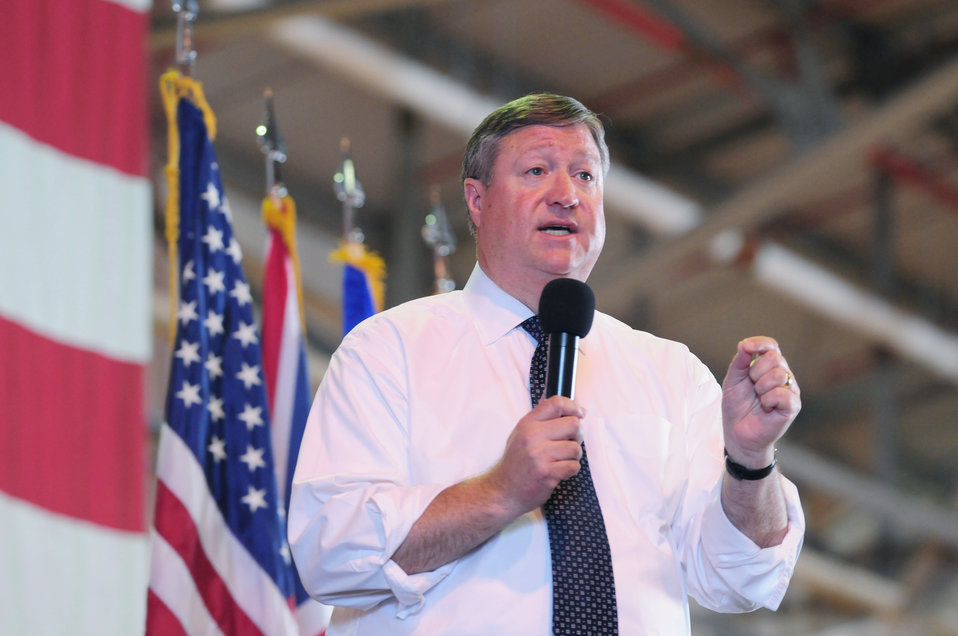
Secretary of the Air Force visits RAF Lakenheath

Secretary of the Air Force Michael Donley speaks to members of the 48th Fighter Wing, 100th Air Refueling Wing and 352nd Special Operations Group July 22, 2010, at Royal Air Force Lakenheath, England. There were approximately 4,000 Airmen in attendance during the all call.